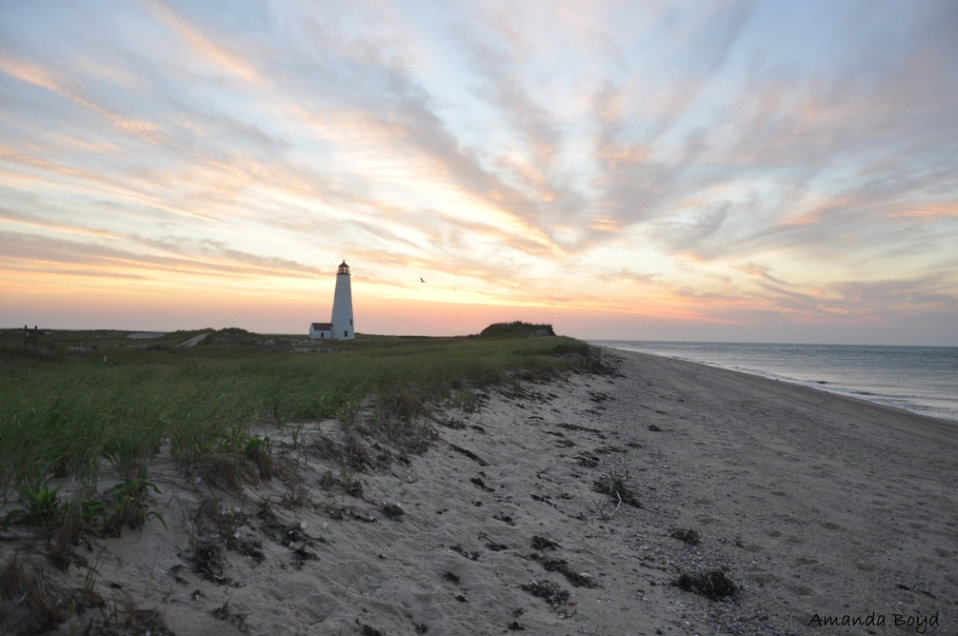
Sunset on Nantucket NWR

Nantucket National Wildlife Refuge